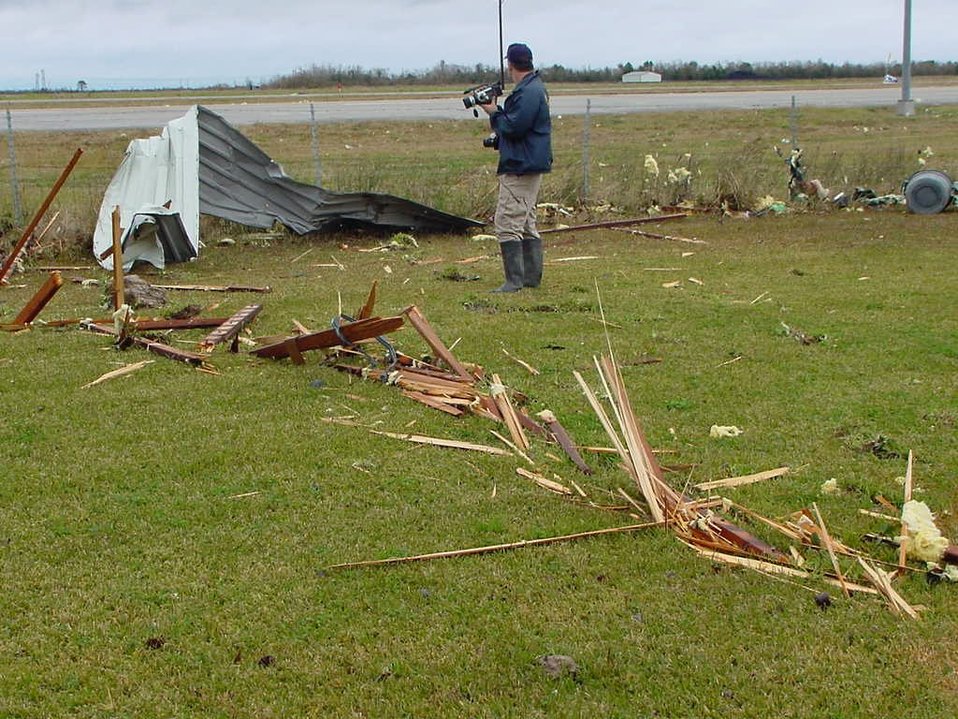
Debris being driven at great rates can be driven several feet into the ground.